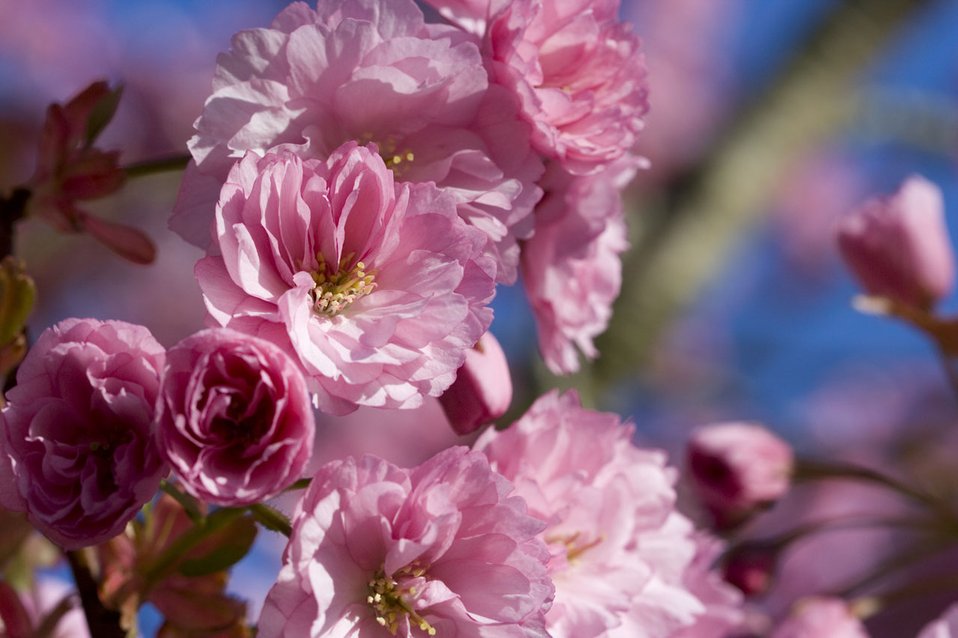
Japanese flowering cherry

Detail photo of japanese flowering cherry.